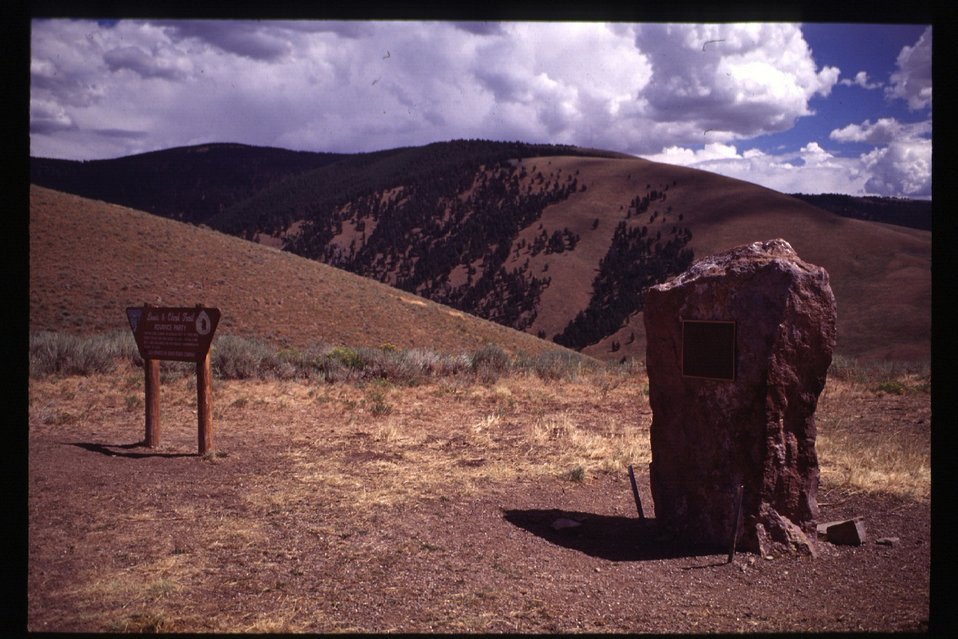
Historic Monument Lewis and Clark National Historic Trail Salmon Field Office UCSC Upper Columbia Salmon Clearwater